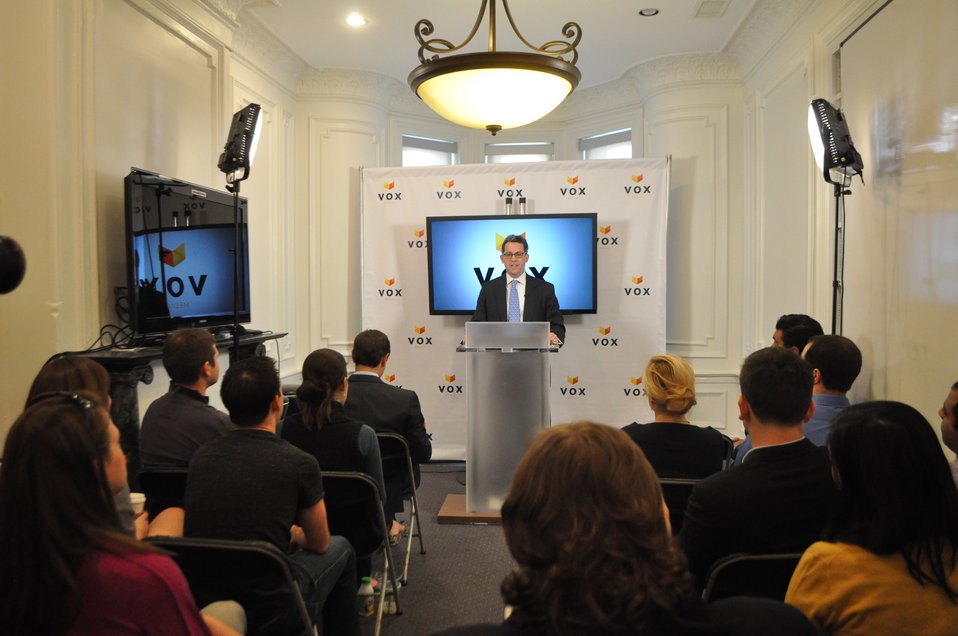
Broadband Challenges and Opportunities, at Vox Media